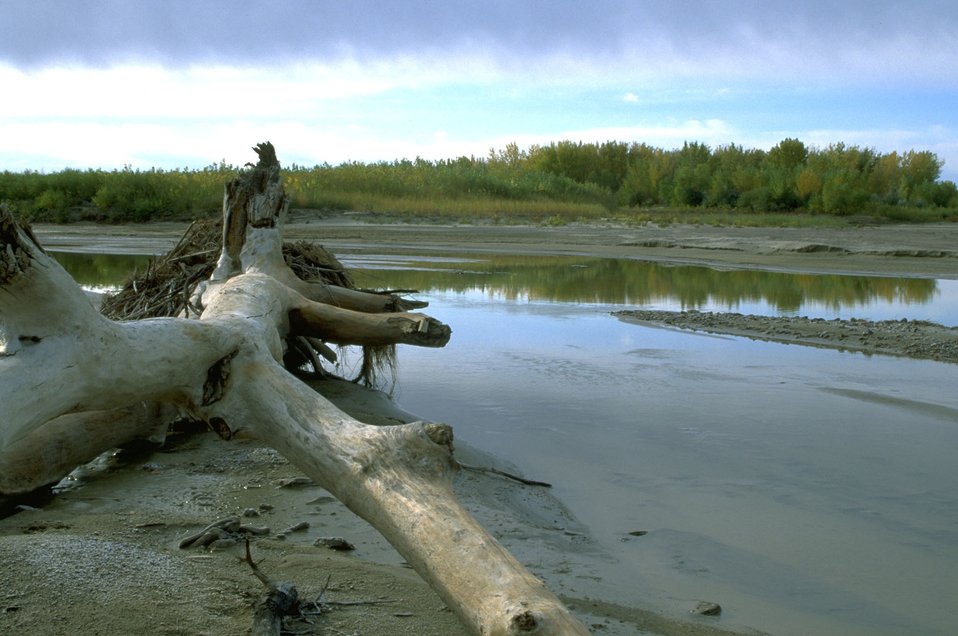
Dead wood on the banks of the Powder River